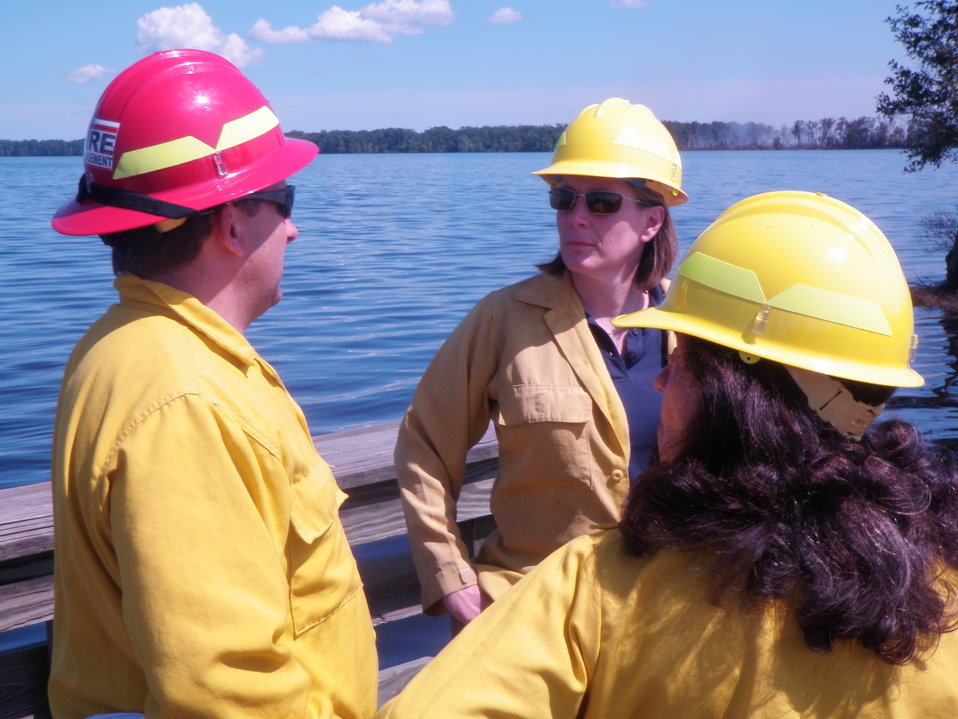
Fire chat at the lake

Suffolk, VA, August 3011. Great Dismal Swamp National Wildlife Refuge Manager Chris Lowie (left) talks about the Lateral West wildlfire at Lake Drummond with Deb Rocque (center)and Martha Nudel of the National Wildlife Refuge System.